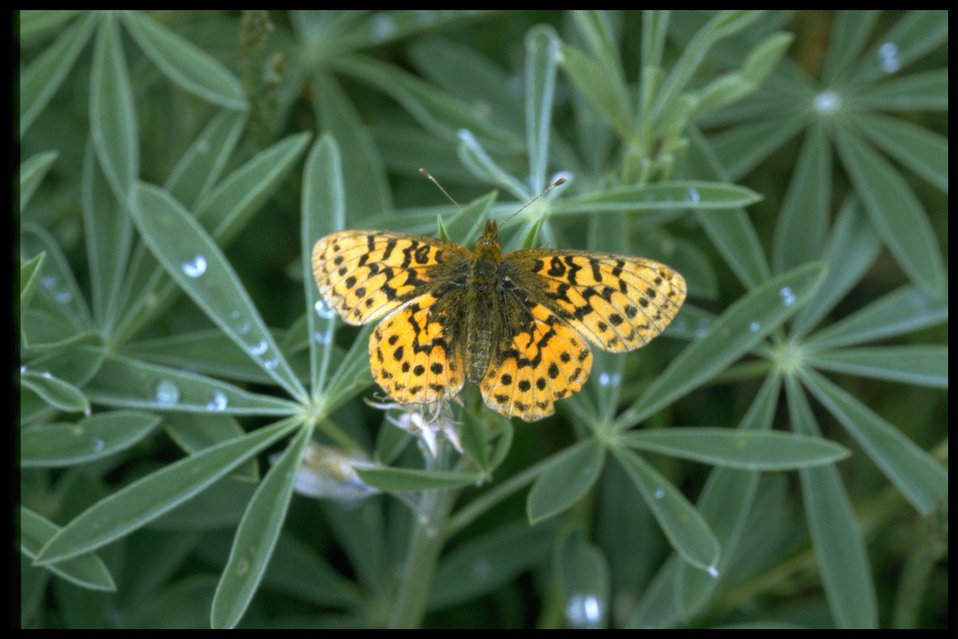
Medium shot of butterfly.